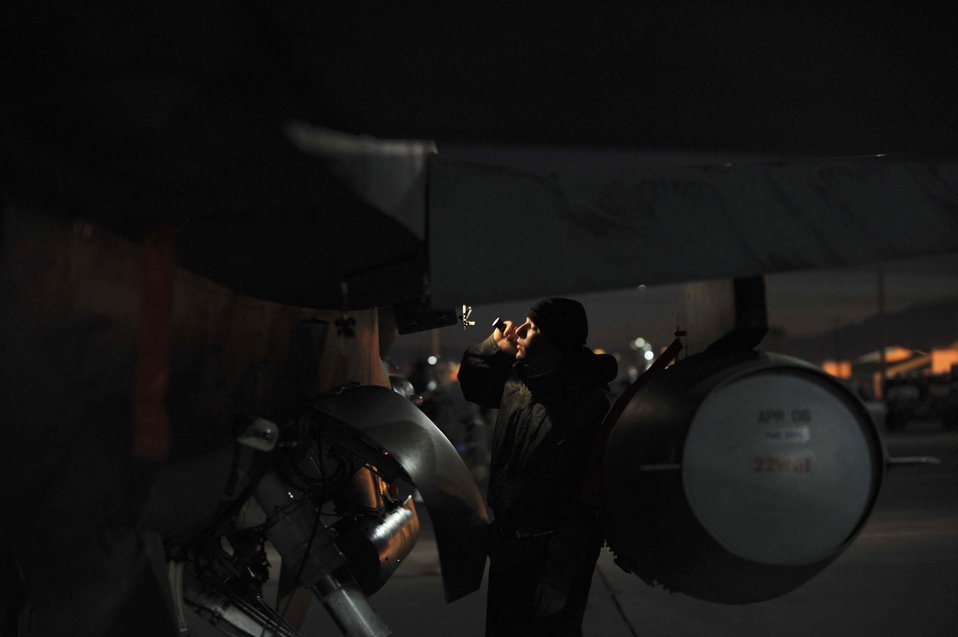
Nighttime operations

Airman 1st Class Patrick Densford conducts a walk-through inspection of an F-16 Fighting Falcon before night flying operations during Red Flag 09-3 Feb. 26 at Nellis Air Force Base, Nev. Red Flag is a multinational exercise providing a realistic environment to practice combat scenarios. Airman Densford is a 52nd Aircraft Maintenance Squadron F-16 crew chief deployed from Spangdahlem Air Base, Germany.